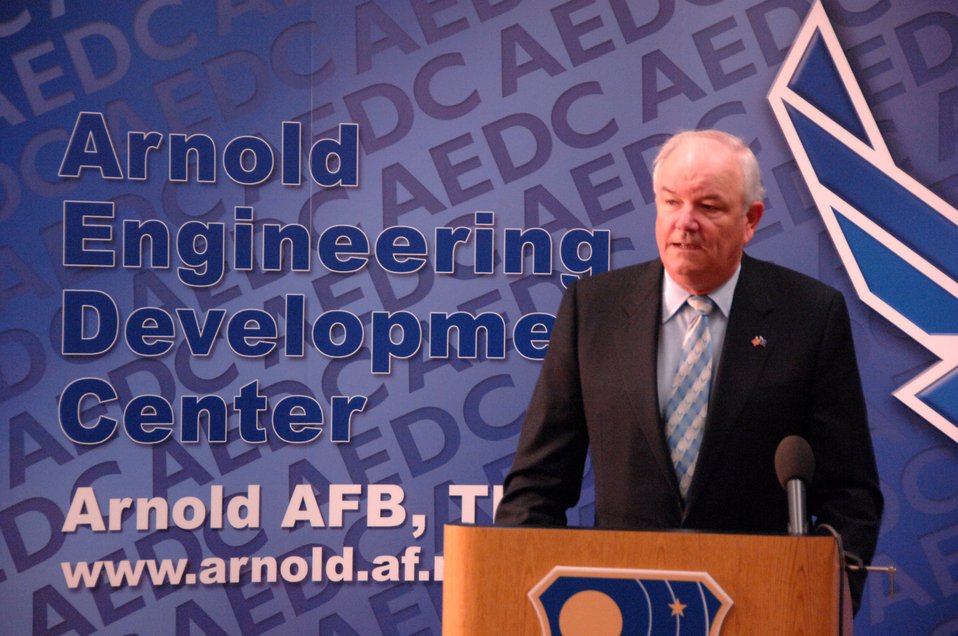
Secretary sees first afterburning engine test with synthetic fuel

Secretary of the Air Force Michael W. Wynne talks to reporters about the testing to certify synthetic jet fuel for use in Air Force combat aircraft Nov. 27 at the Arnold Engineering Development Center, Arnold Air Force Base, Tenn. The secretary witnessed the first ground testing of the General Electric F101 engine using a 50-50 mix of Fischer-Tropsch and JP-8 jet fuels.